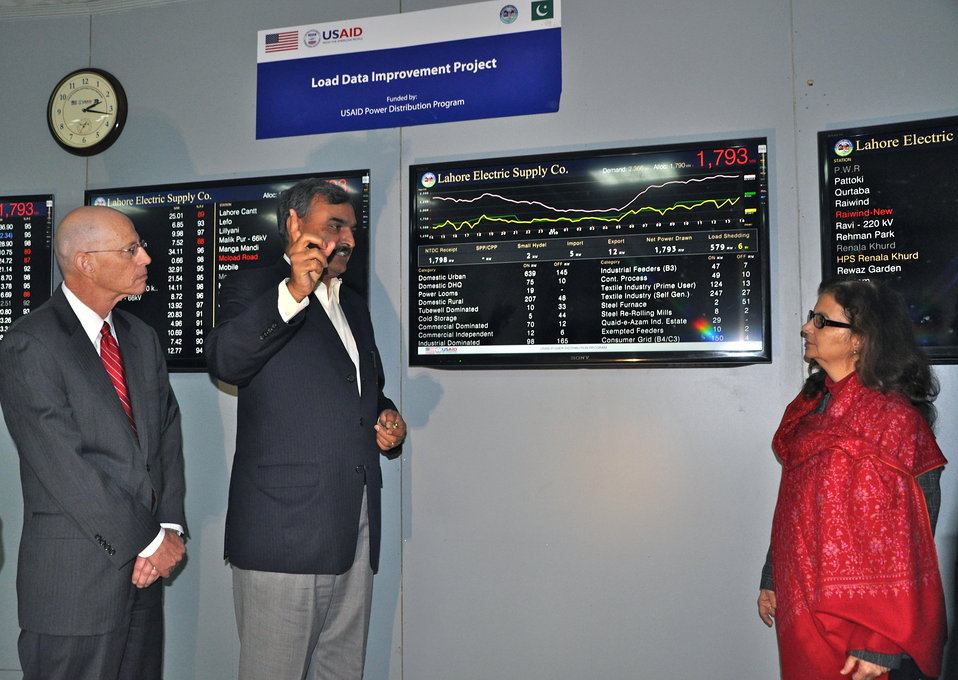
USAID Mission Director Gregory Gottlieb (left) and U.S. Consul General in Lahore Nina Fite at the inauguration of the Power Distribution Control Center at LESCO

Lahore, February 6, 2014: Marking a milestone in U.S. support to Pakistan’s energy sector, U.S. Consul General Nina Maria Fite inaugurated the Power Distribution Control Center at the Lahore Electric Supply Company (LESCO). The LESCO center was established with support from the U.S. Agency for International Development (USAID) and will enable LESCO to monitor the flow of power through their grid stations. The new meters will verify actual power flow and reduce unplanned load-shedding.

“This project will provide real-time access to electricity load data to managers of Pakistan’s electricity grid and help LESCO overcome unscheduled load-shedding,” said Consul General Fite. “The U.S. Government and the American people are committed to assisting the Government of Pakistan to improve the power distribution system throughout Pakistan. We partner with power distribution companies to improve their operations, reduce losses, and ultimately make sure that the Pakistani people have a more reliable power supply.”

Unplanned load-shedding is one of the leading challenges in the country’s power crisis, costing Pakistan an estimated two percent of its Gross Domestic Product and 400,000 jobs in 2012. Load-shedding is a consequence of the imbalance between electricity generation and demand, and only increased generation will completely eliminate load-shedding. Unscheduled load-shedding, however, is the result of a lack of real-time energy consumption data and can be reduced by improved monitoring systems, such as the USAID project inaugurated at LESCO.

USAID’s five-year Power Distribution Program seeks to work jointly with government-owned DISCOs in Pakistan to improve their performance, reducing losses and improving revenues and customer services. Through this program and many others, the United States provides assistance to the Government of Pakistan in its efforts to reform the power sector and end the current energy shortfall.

More information about the Power Distribution Program can be found on the program’s website at pdip.pk